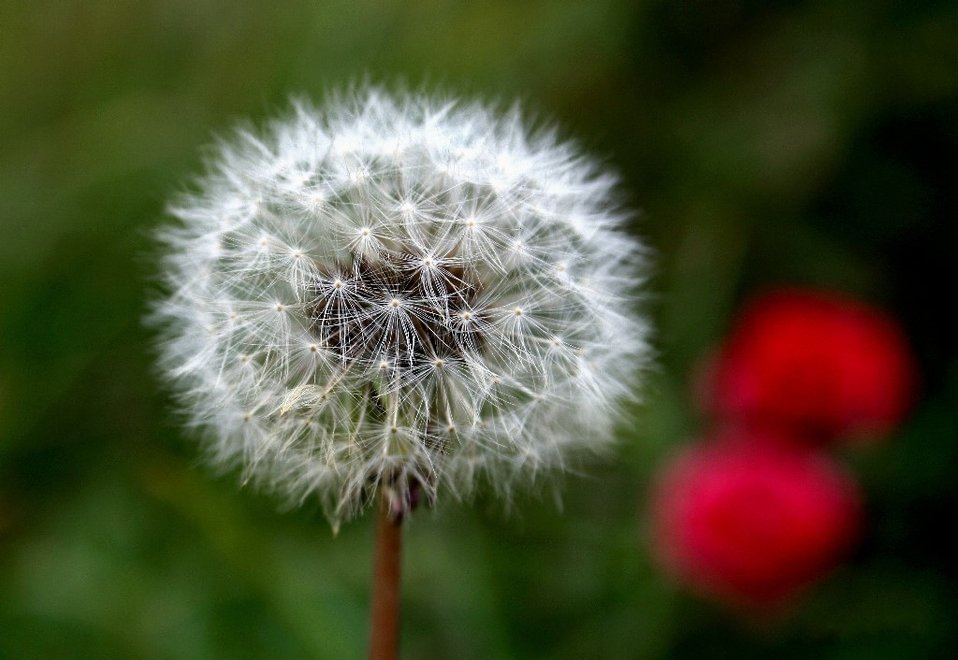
Dandelion seedhead